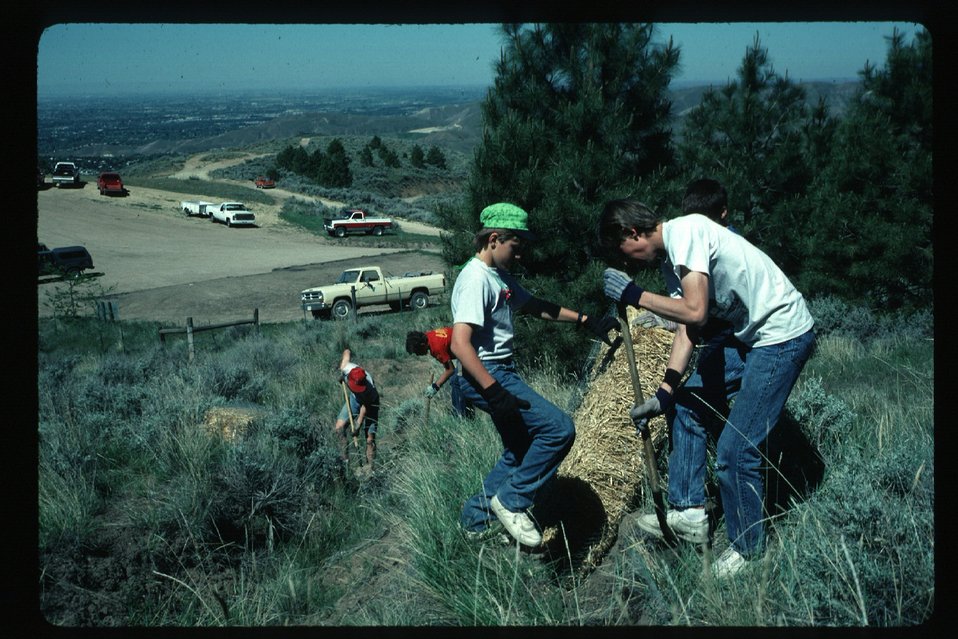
Rangeland Straw bale dams Boise Front Foothills Four Rivers Field Office LSRD Lower Snake River District